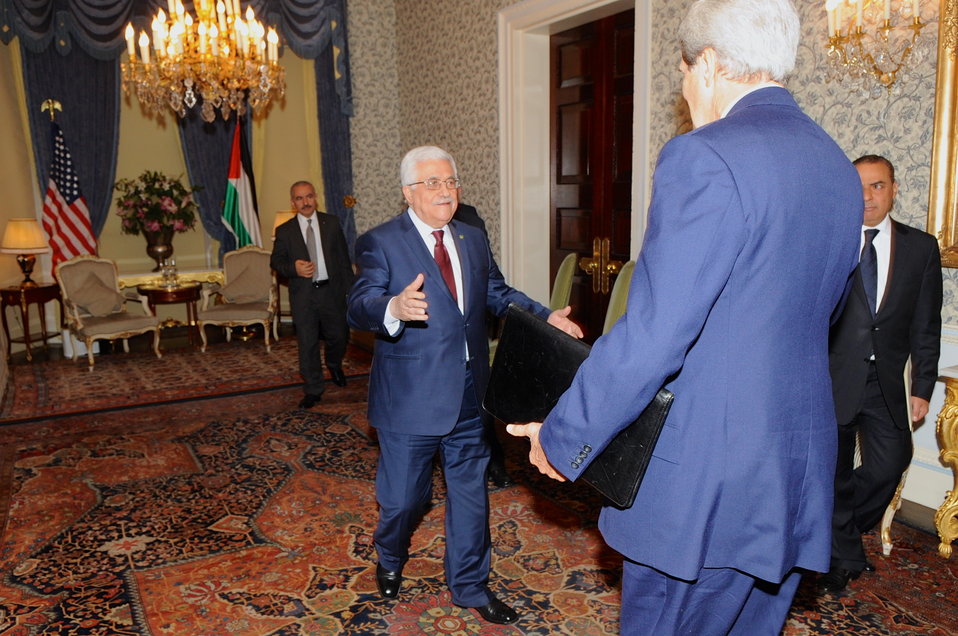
Secretary Kerry Meets With Palestinian Authority President Abbas

Palestinian Authority President Mahmoud Abbas welcomes U.S. Secretary of State John Kerry for a meeting focused on final status negotiations with Israel in London, United Kingdom on September 8, 2013.